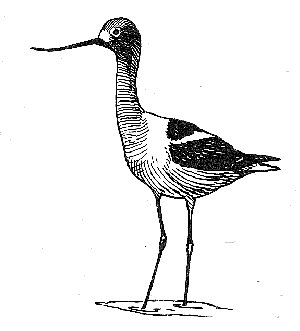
Illustration of an avocet.